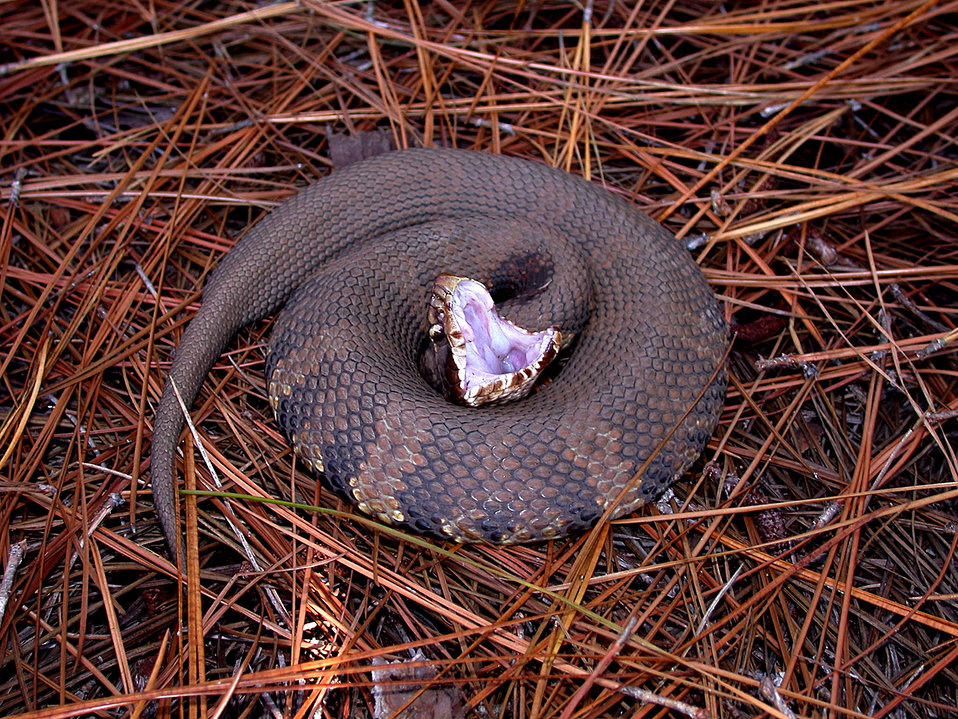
This 2005 photograph depicted an 'eastern cottonmouth' snake, Agkistrodon p. piscivorus, as it was coiled atop a ground cover of pine needles. Startled, this snake had taken on a defensive posture, bearing its fangs in a very aggressive manner.When one thinks about snakes indigenous to the hurricane prone areas in the southeastern United States, the cottonmouths or water moccasins are probably the first snakes to come to mind, which is of importance to those who either live in these regions, or who might be deployed to such areas as a first-responder offering aid to those affected by such a disaster. The cottonmouths are large, dark, heavy-bodied snakes, and are the largest snakes in the New World Agkistrodon species complex, and are the only members of the group that are semiaquatic (Gloyd and Conant, 1990).